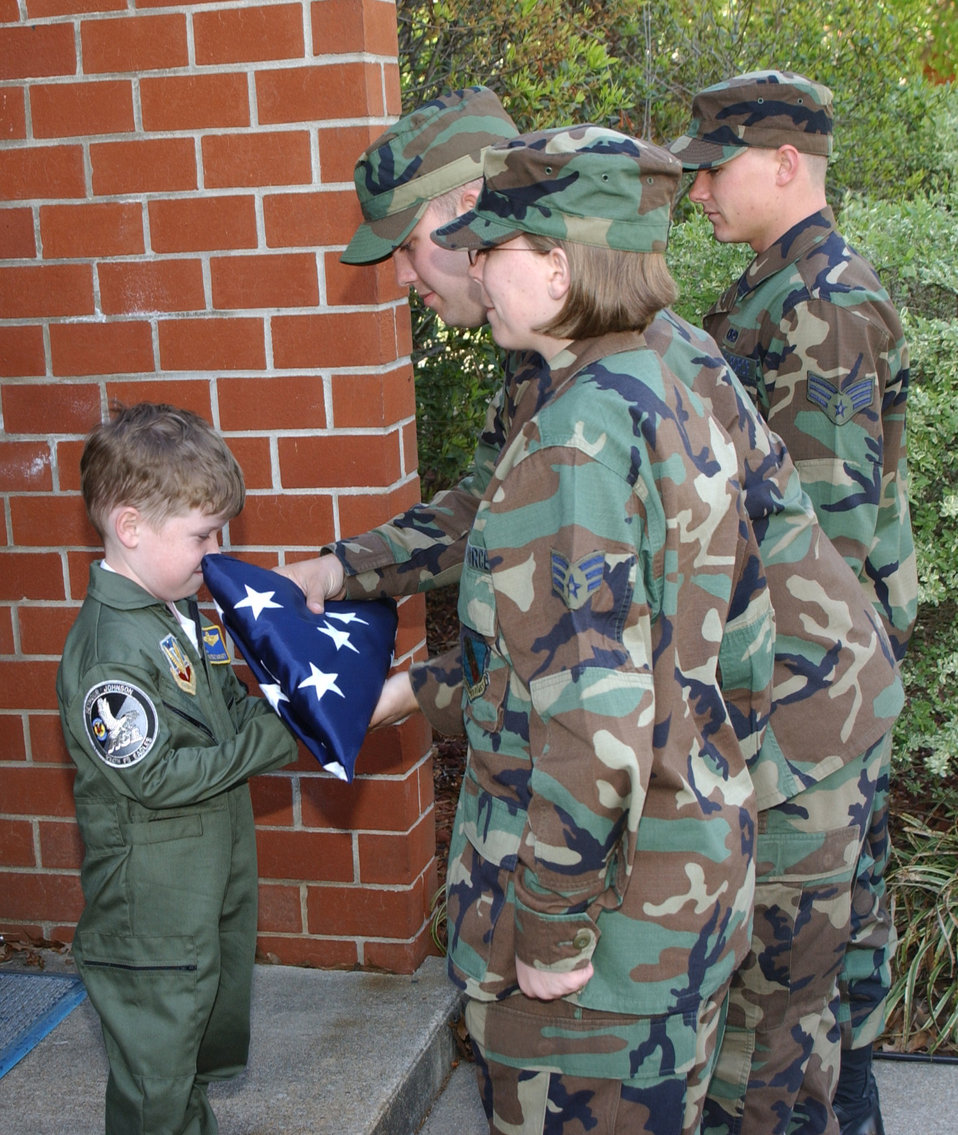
5-year-old cancer survivor plays pilot for a day

SEYMOUR JOHNSON AIR FORCE BASE, N.C. -- At the end of a memorable day, Evan Moriarty participates in a retreat ceremony with the help of students at the Airman leadership school April 15. After the ceremony, Evan was given the flag that flew over the school that day.